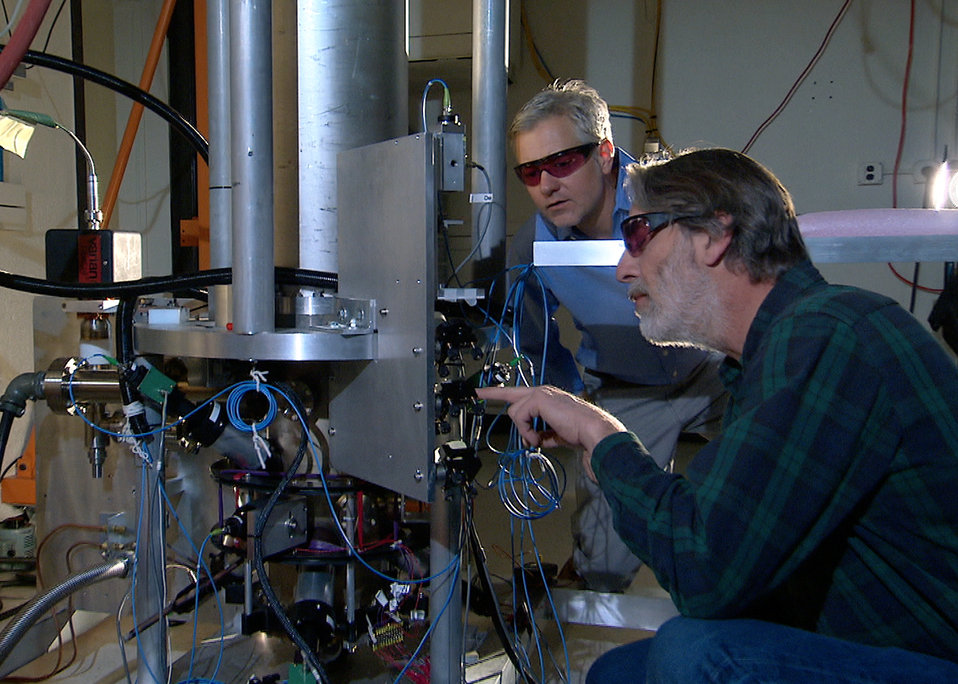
F2 Atomic Clock

NIST physicists Steve Jefferts (foreground) and Tom Heavner with the NIST-F2 'cesium fountain' atomic clock, a new civilian time standard for the United States.